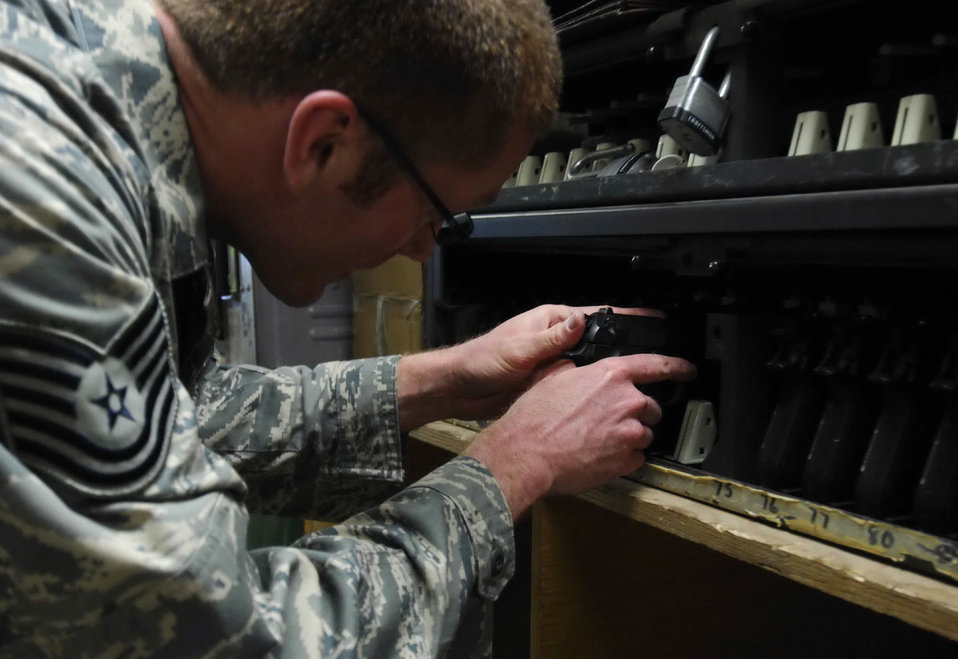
Checking equipment for life

Tech. Sgt. Ryan McMaster cleans an M-9 pistol before putting it back into a secure gun rack Dec. 12 at Bagram Air Base, Afghanistan. Sergeant McMaster, a 774th Expeditionary Airlift Squadron aircrew life support technician, manages and performs inspections, maintenance and adjustments of aircrew life support equipment.